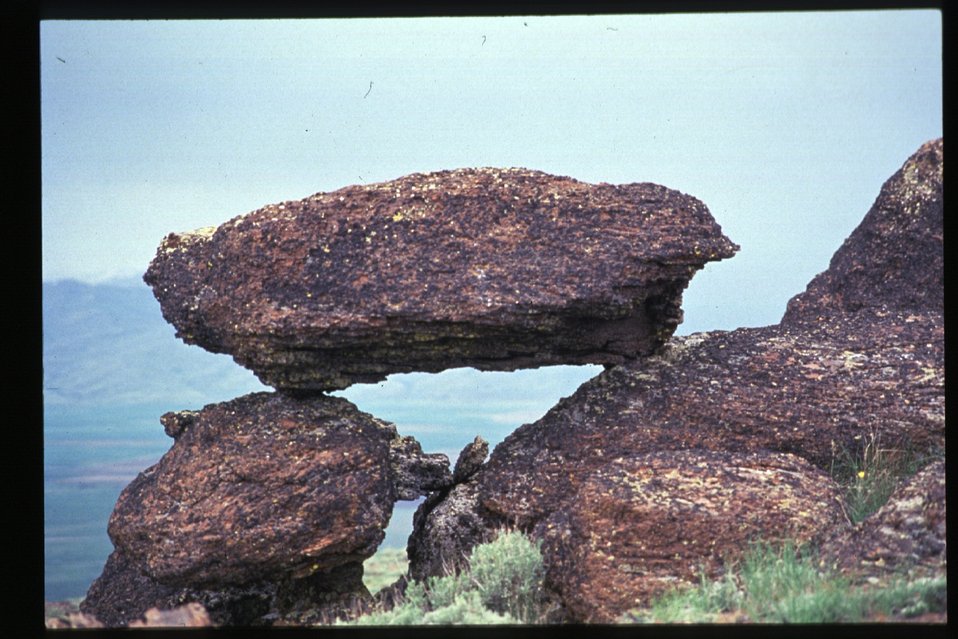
Rock Formation Scenic USRD Upper Snake River District